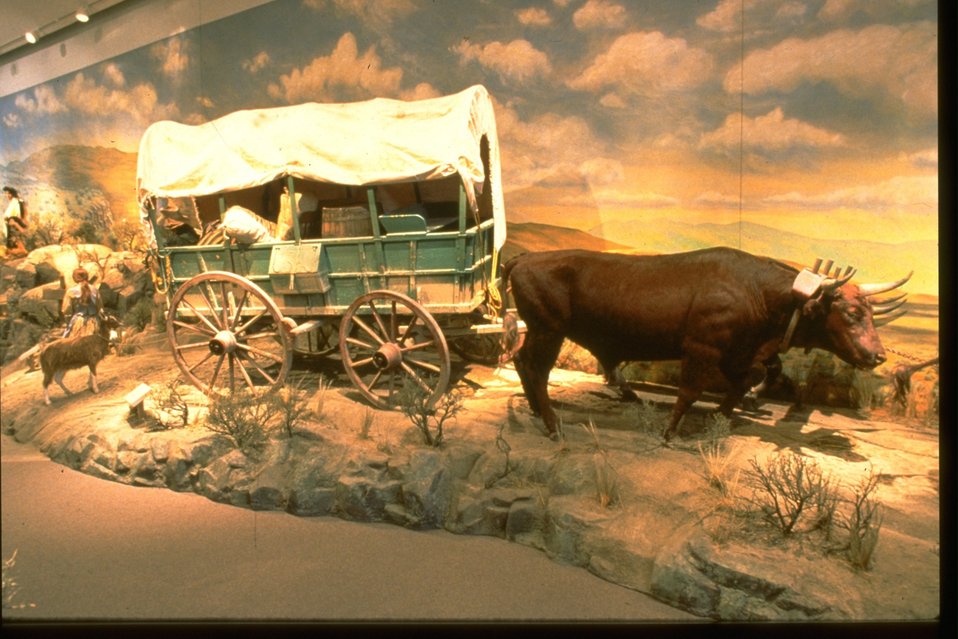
Living history exhibit at the NHOTIC with ox pulling a covered wagon.